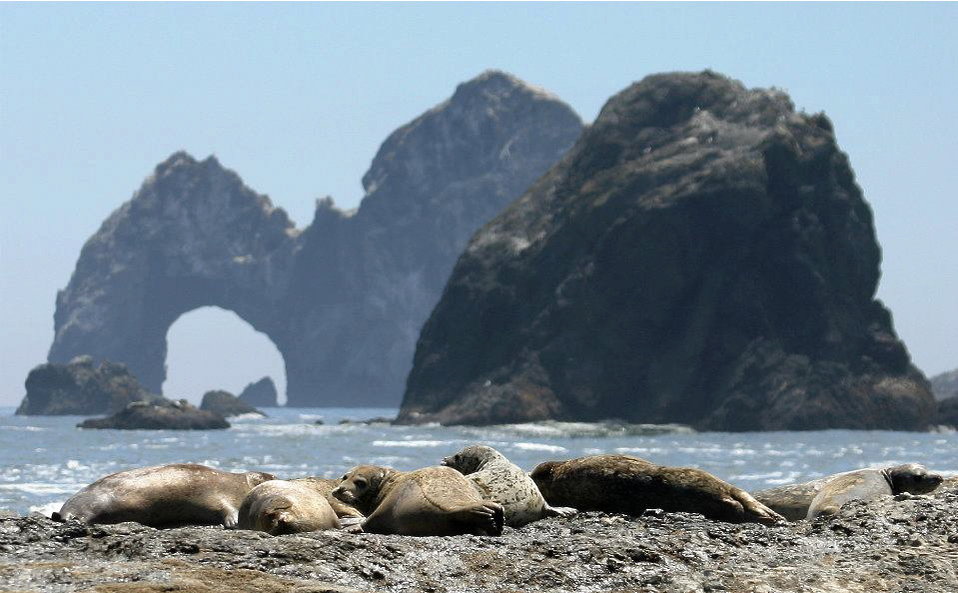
harbor seals at Mack Arch

Oregon Coast National Wildlife Refuge Complex, OR